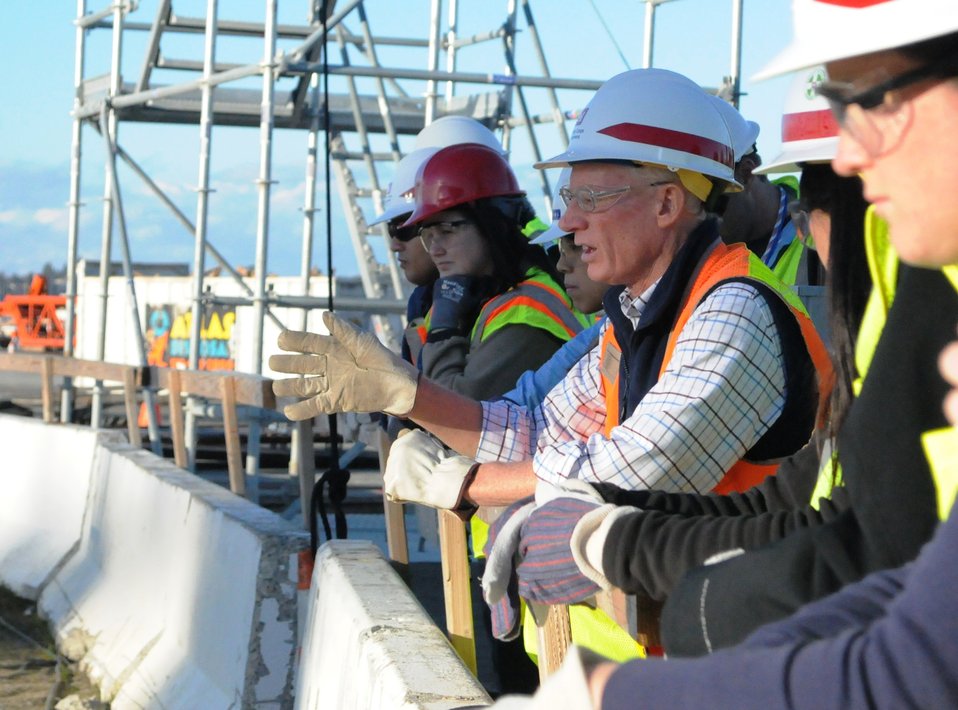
Young engineers visit Folsom Dam Spillway construction site

The U.S Army Corps of Engineers’ David Neff (featured center) describes the Folsom Dam spillway project to a group of young Sacramento engineers at the construction site in Folsom, Calif., Jan. 26, 2013. Neff is the Corps’ technical lead for the project. The Folsom Dam spillway will provide enhanced flood damage reduction and dam safety when completed in late 2017.